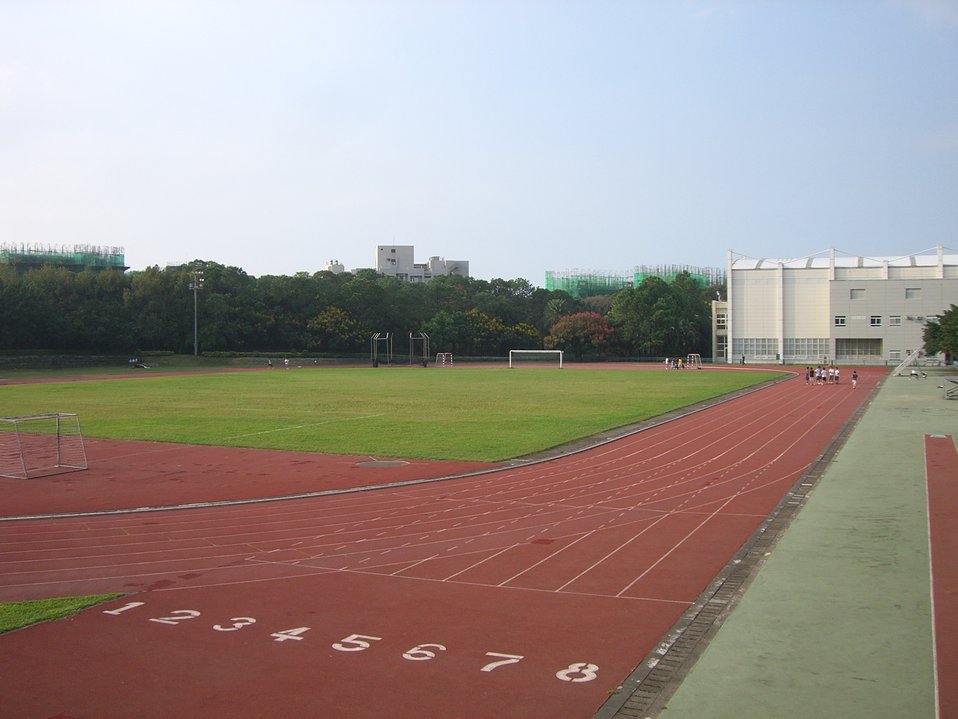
NCTU campus